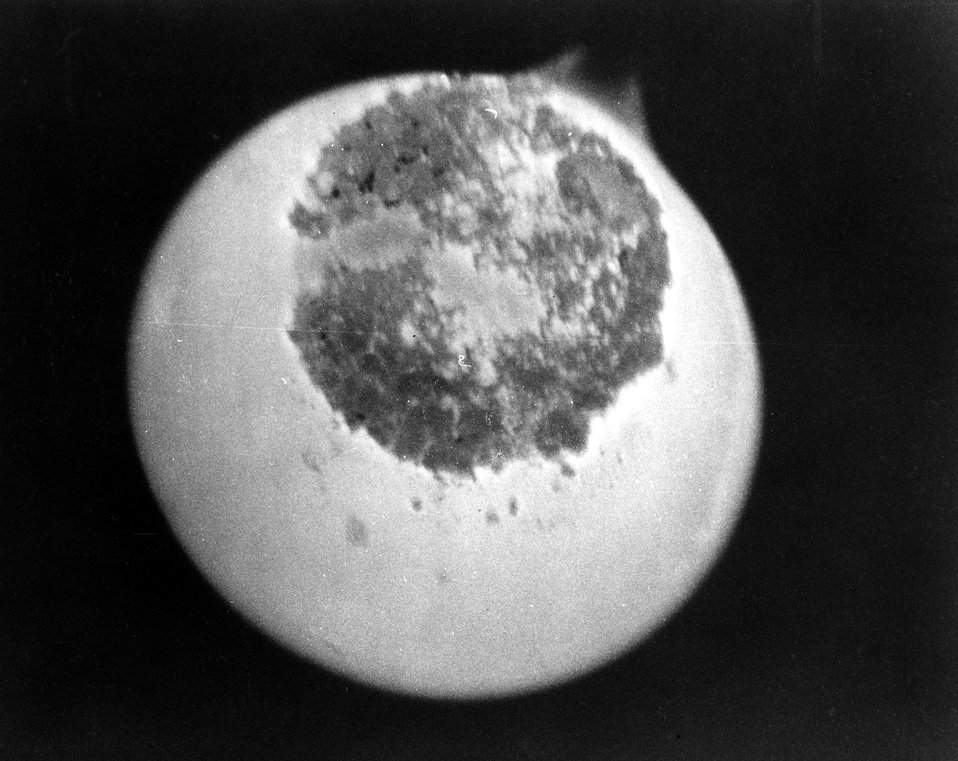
This sample of Protactinium-233 (dark circular area in the photo) was photographed in the light from its own radioactive emission (the lighter area) at the National Reactor Testing Station in Idaho. Circa 1969.